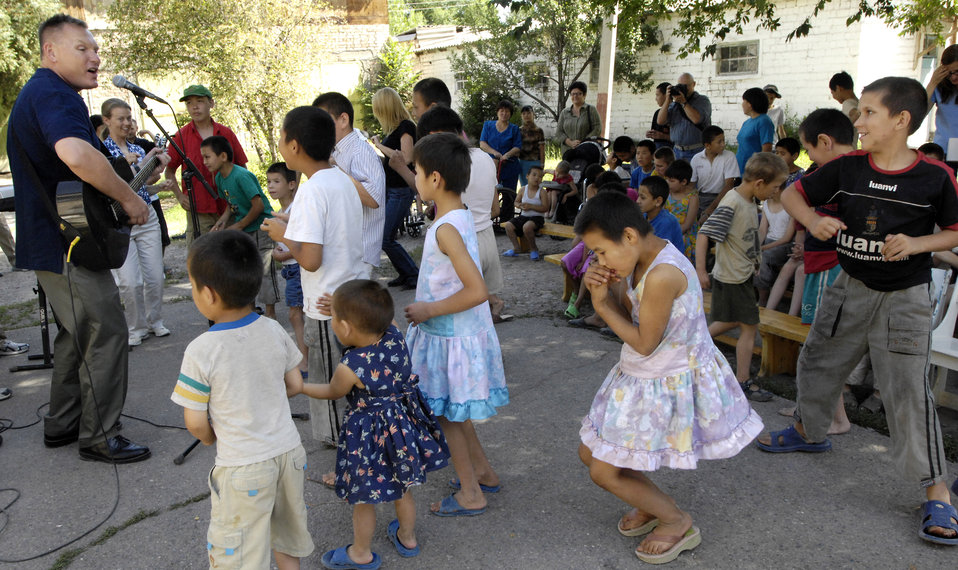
Special concert for some special children

Senior Master Sgt. James Weber performs for the children of the Belovodosky Orphanage June 14 in Kyrgyzstan. Sergeant Weber is a guitarist and vocalist for the U.S. Air Forces Central Band Falcon. After the band performed at the orphanage, the children returned the favor by singing some of their favorite Russian military songs for the band members.